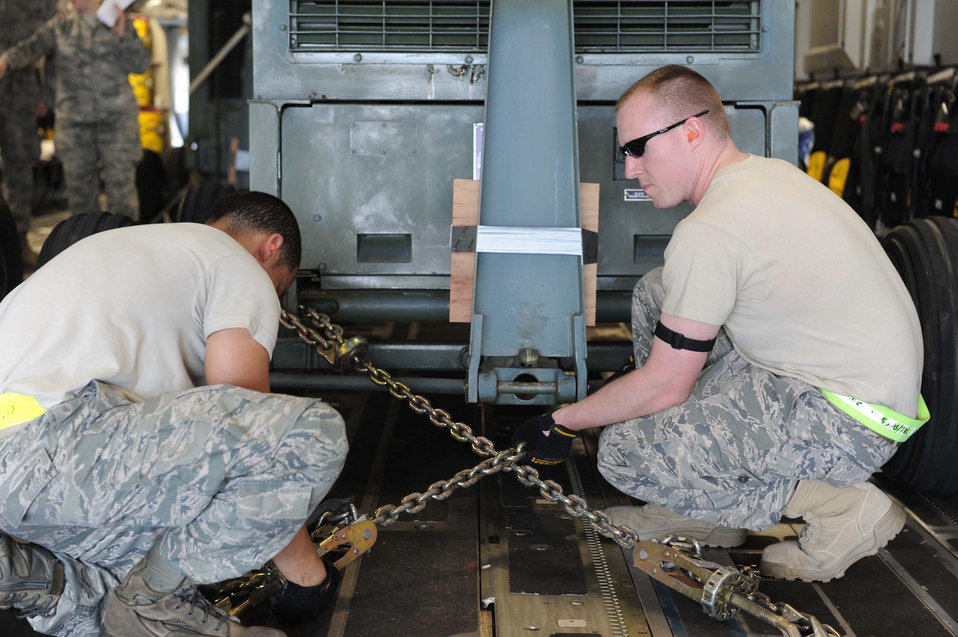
humanitarian mission to Japan

U.S. Air Force ramp service specialists with the 735th Air Mobility Squadron secure a generator to the floor of a U.S. Air Force C-17 Globemaster III cargo aircraft at Joint Base Pearl Harbor-Hickam, Hawaii, in preparation for its departure on a humanitarian mission to Japan on March 12, 2011. The C-17 will be flown to various Air Force bases in Japan during its mission to provide support for Japan relief efforts in the wake of tsunami and earthquake damage there.